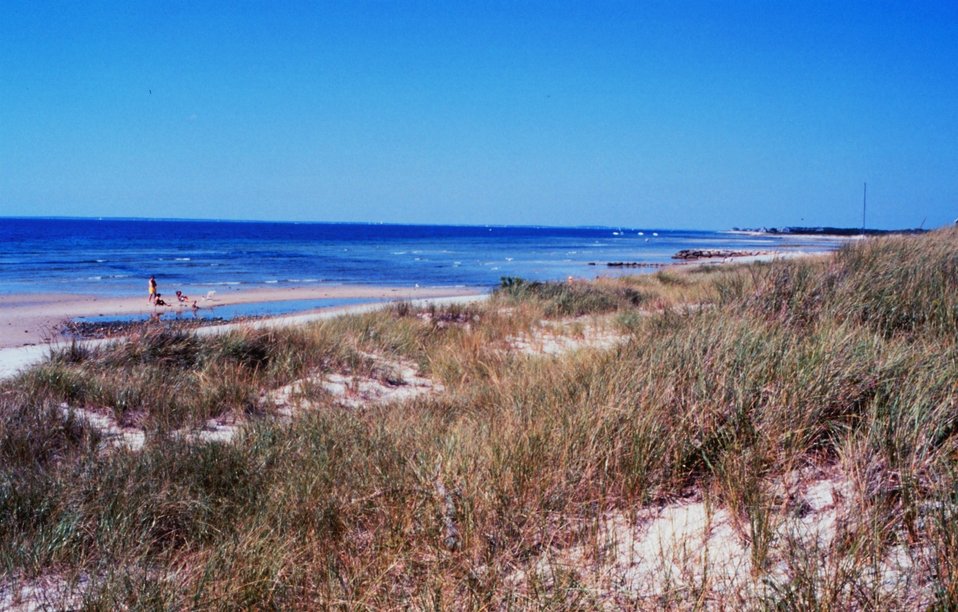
Buzzards Bay - Falmouth